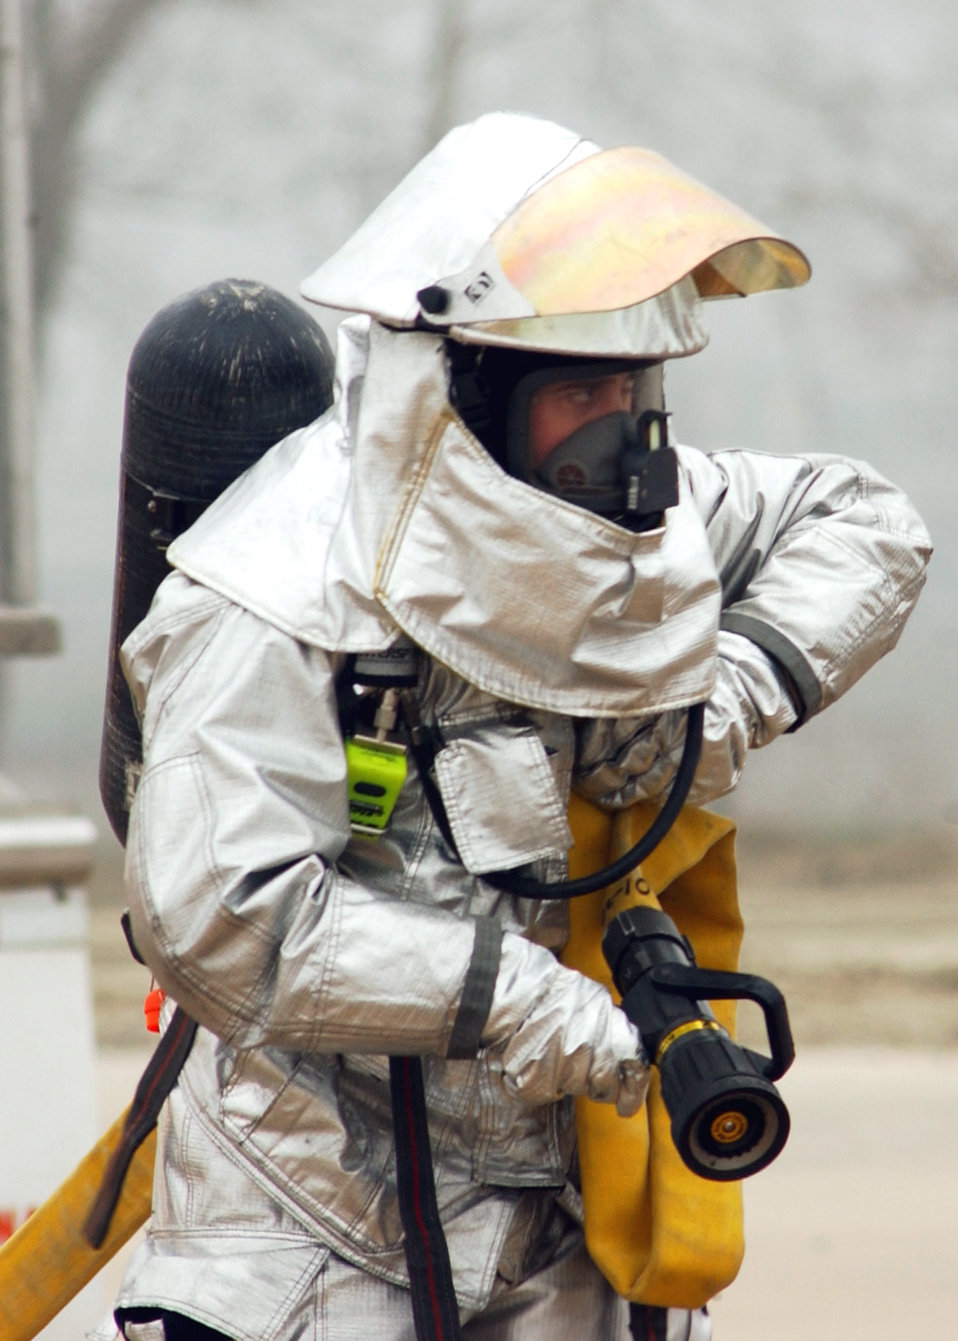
Beverly High

KUNSAN AIR BASE, South Korea -- Senior Airman Dea Anglo Williams drags a hose to get in postion to put out a fire during Operational Readiness Exercise Beverly High 0404 here on March 22. Airman Williams is from the 8th Civil Engineer Squadron.